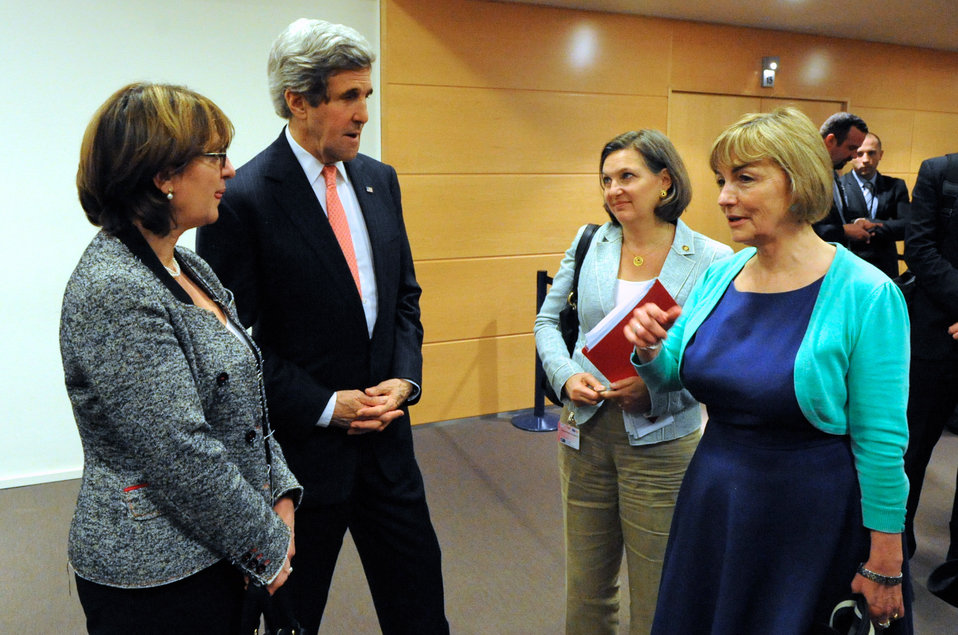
Secretary Kerry, Assistant Secretary Nuland Meet With Foreign Ministers in Brussels

U.S. Secretary of State John Kerry and Assistant Secretary of State Toria Nuland meet with Georgian Foreign Minister Maia Panjikidze and Croatian Foreign Minister Vesna Pusic on the sidelines of the NATO Ministerial Meeting in Brussels, Belgium, on April 2, 2014.